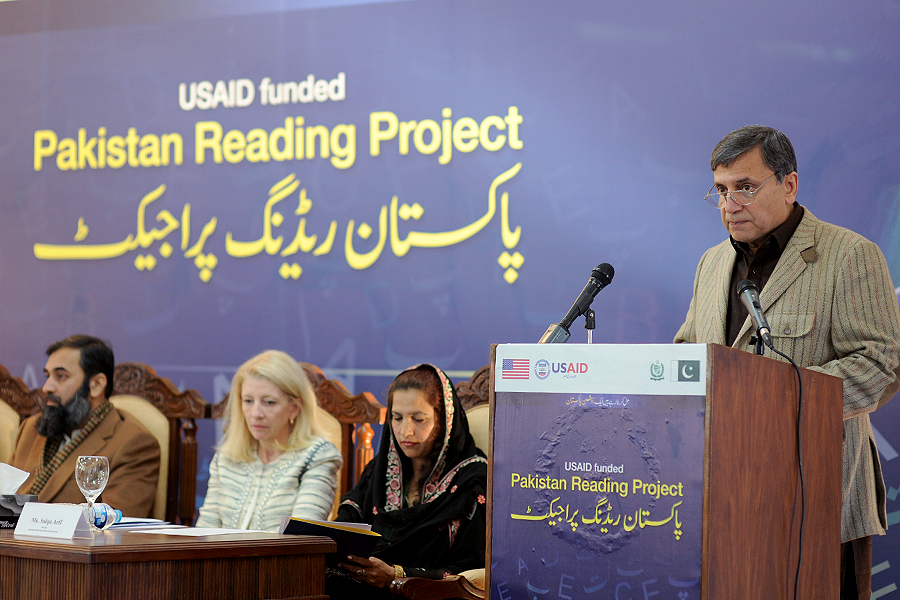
United States and Pakistan Launch the Pakistan Reading Project